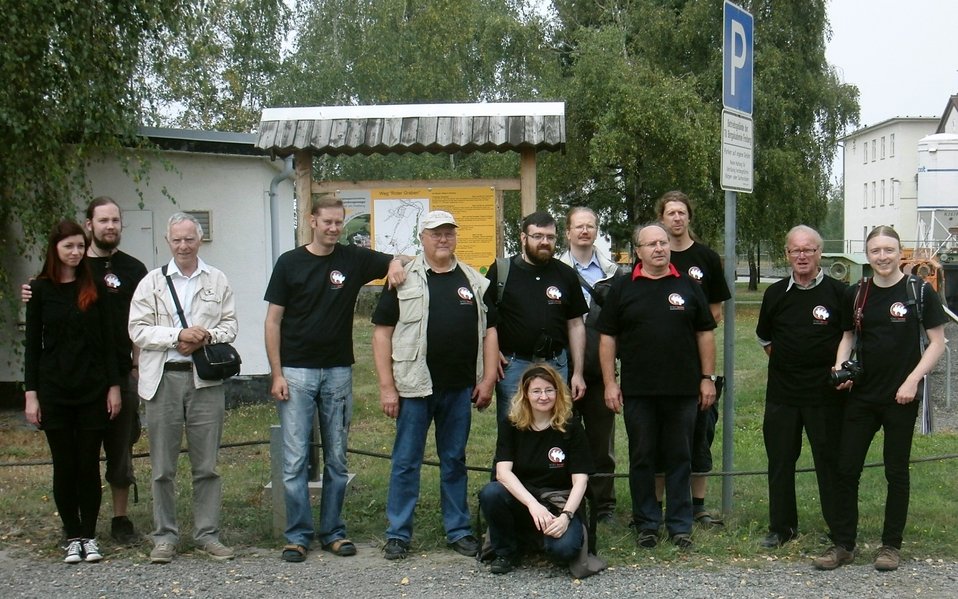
Deutsch: Gruppenfoto Reiche Zeche 13.08.31.